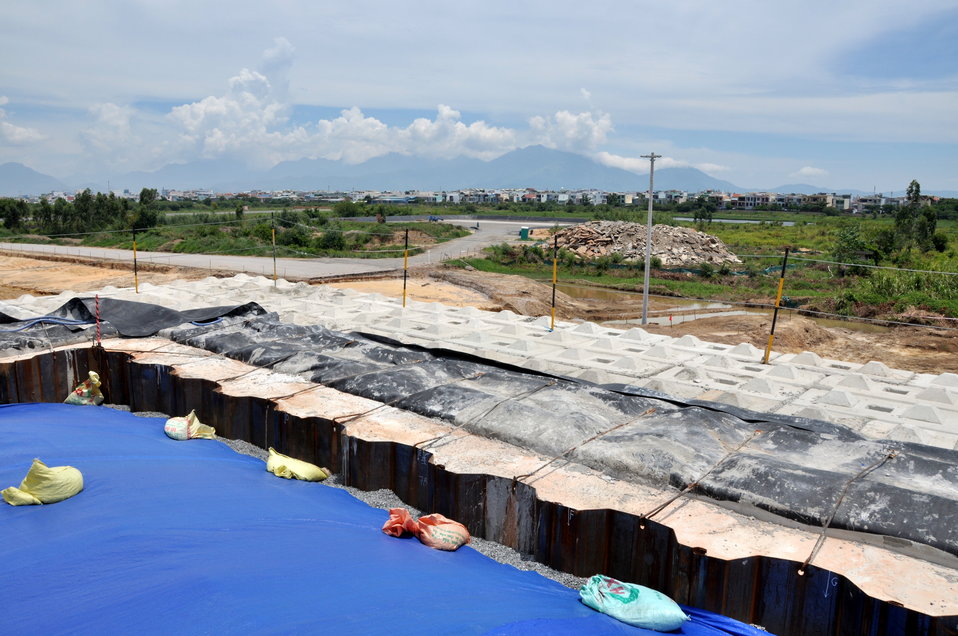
USAID Dioxin Contamination Project Progress: Containment Structure

Progress at the Environmental Remediation of Dioxin Contamination Project at Danang Airport

July 16, 2013